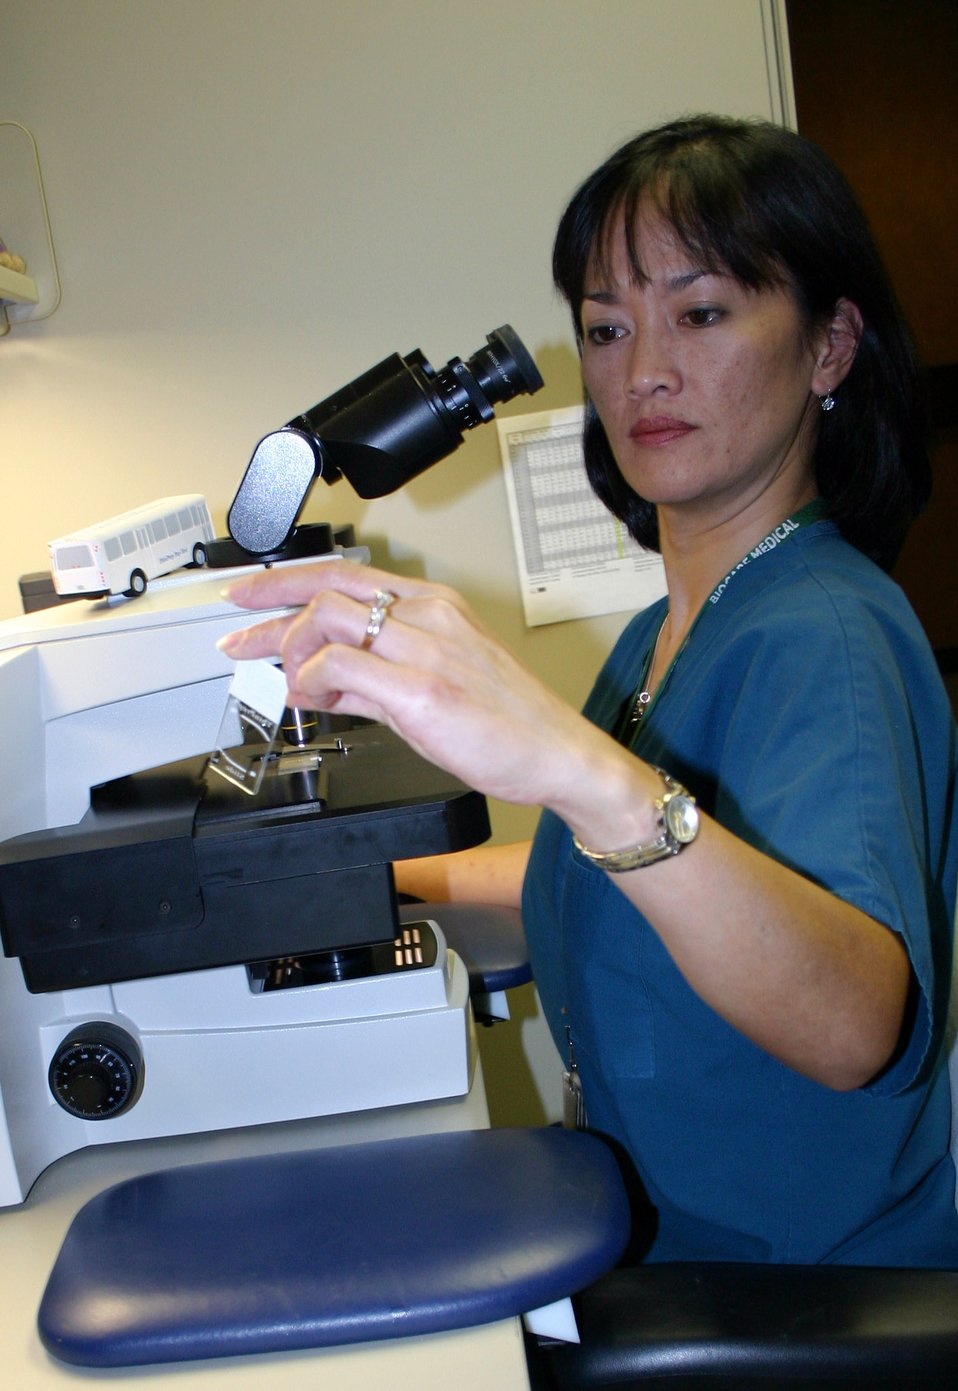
Cytology

LACKLAND AIR FORCE BASE, Texas (AFPN) -- Cytotechnologist Arlene Murphy views a cytology slide on the computer-assisted microscope. The new enhanced program combines the power of computer-assisted primary screening with human expertise, allowing the Cytology Center to go from reading 75,000 slides annually to 215,000, with an increase in diagnostic confidence, sensitivity and productivity.